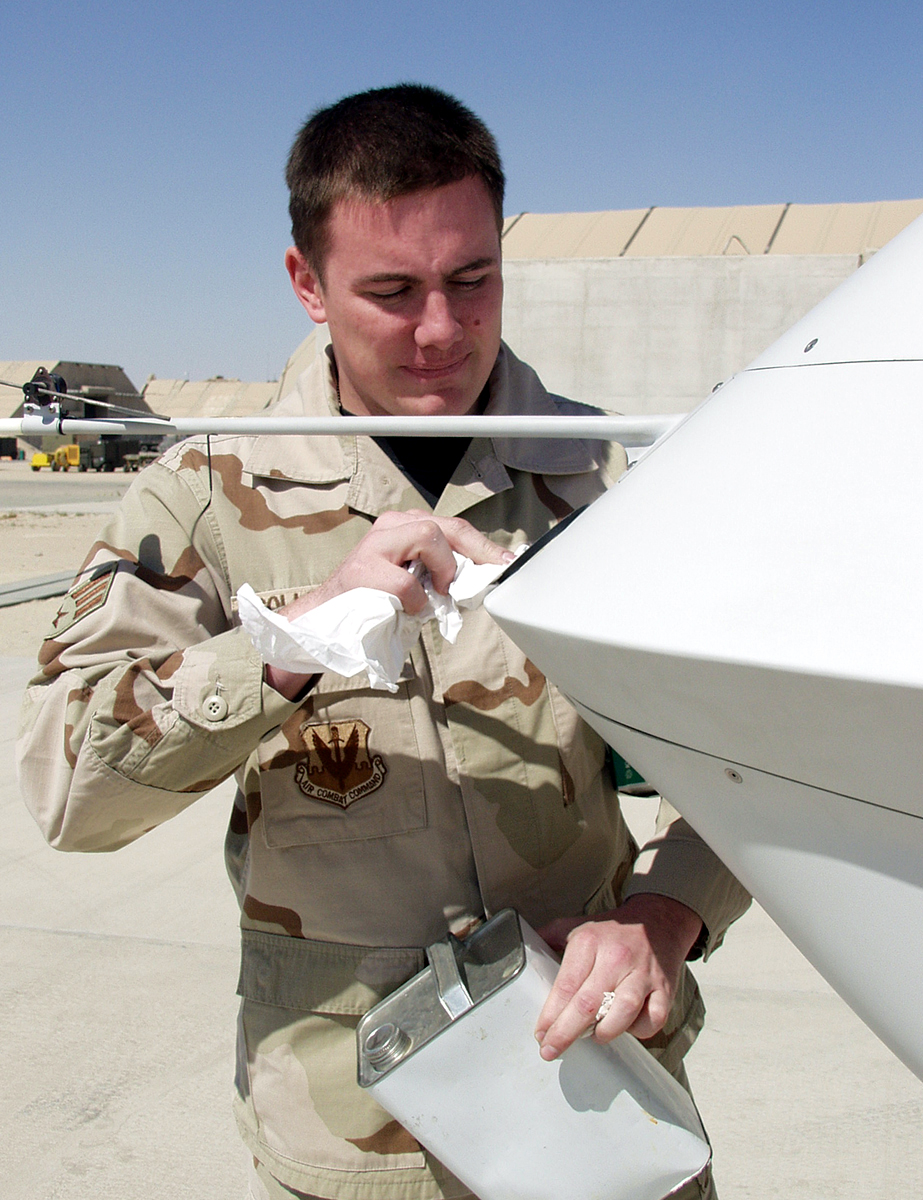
Cleaning the

OPERATION IRAQI FREEDOM - Senior Airman Joseph Gollhofer, a 46th Expeditionary Reconnaissance Squadron crew chief, cleans the small lens pilots must use to fly the MQ-1 Predator. Pilots describe the view as